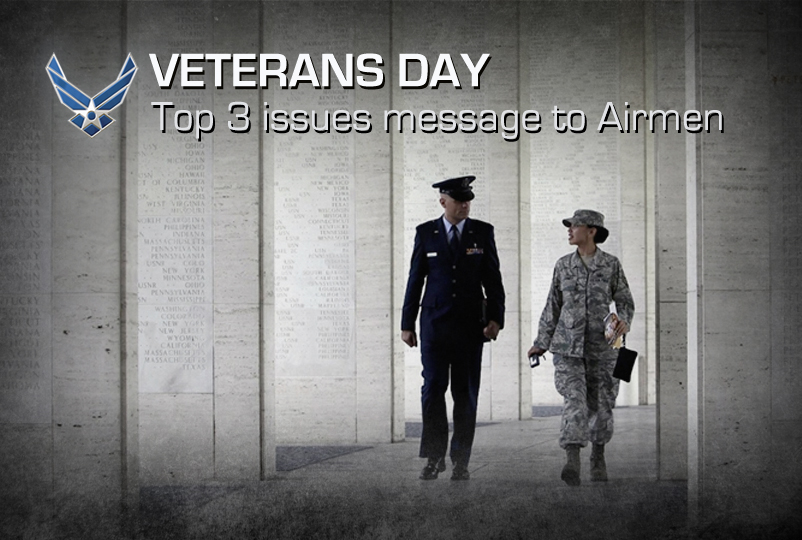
Veterans Day Message